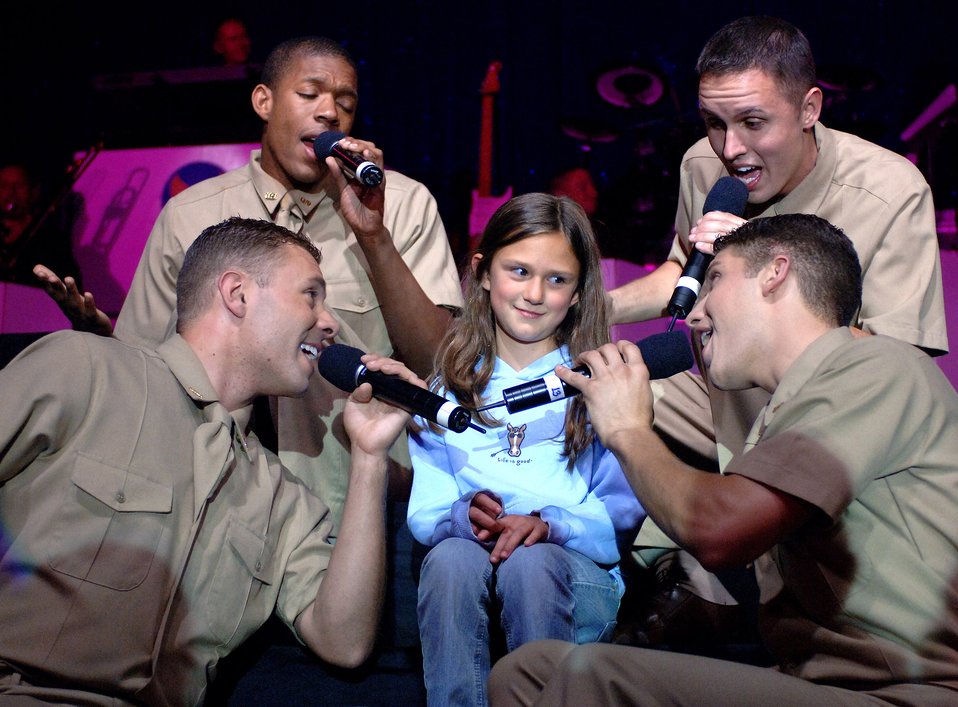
Tops in Blue brings sergeant home for an encore

Eight-year-old Kaitlin McGarey is treated to a serenade during a Tops in Blue musical tribute to 60 years of Air Force history Aug. 18 at Old Orchard Beach, Maine. Kaitlin is the niece of Staff Sgt. Mark Schmidt, bass guitarist for Tops In Blue. Sergeant Schmidt is a native of Old Orchard Beach and performed before his family for the first time. Tops In Blue was in Maine as part of Air Force Week New England.